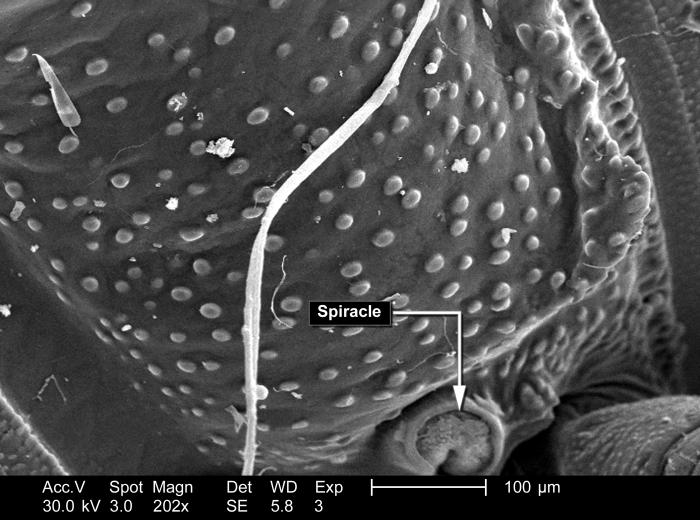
Magnified 202x, this scanning electron micrograph (SEM) depicted the many variations in patterns displayed on the chitinous exoskeletal surface of this millipede that had been found deceased on the ground in the Decatur, Georgia suburbs. Note the spiracle through which the insect carries out the inspiration and expiration of its air supply.